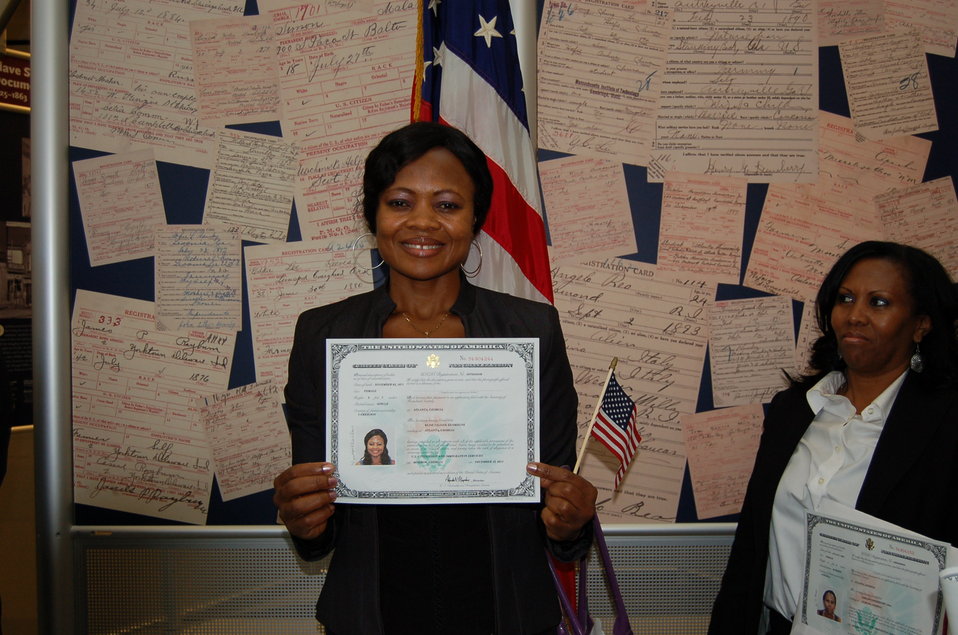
New Citizens